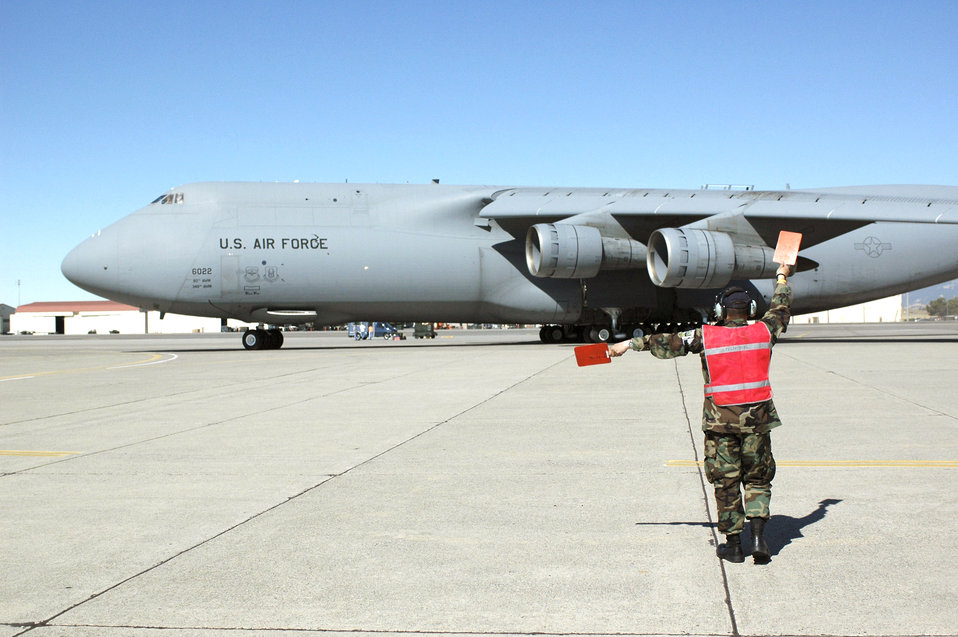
AMC answers call to help rescue Russian sailors

TRAVIS AIR FORCE BASE, Calif. -- A C-5 Galaxy departs here for Naval Air Station North Island, Calif., supporting a humanitarian mission to rescue seven Russian sailors trapped aboard an AS-28 minisubmarine off the Kamchatka peninsula. Once at NAS North Island, Airmen picked up a team of Sailors and two unmanned rescue vehicles, called Super Scorpios. The C-5 continued to Russia nonstop with the help of Air Force aerial refueling aircraft.